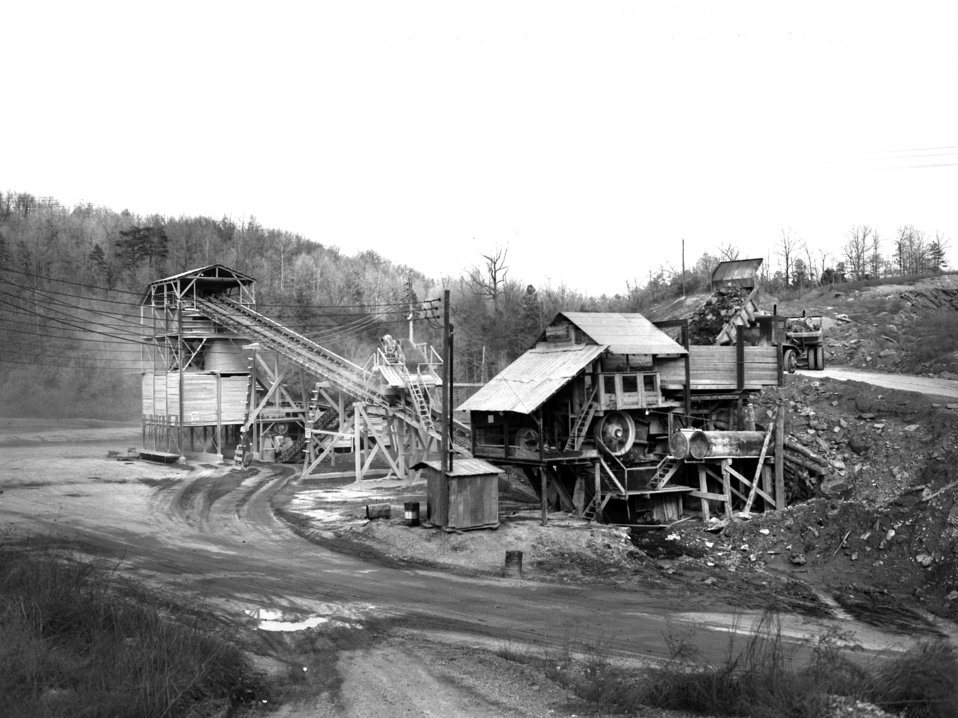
Quarry Oak Ridge

3263-6d DOE photo Ed Westcott 1-23-1947